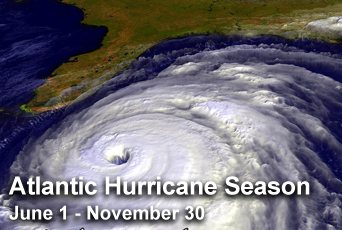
Air Force forecasters gear up for hurricane season

National Hurricane Center officials predict the Atlantic hurricane season to have a 75 percent chance of being an